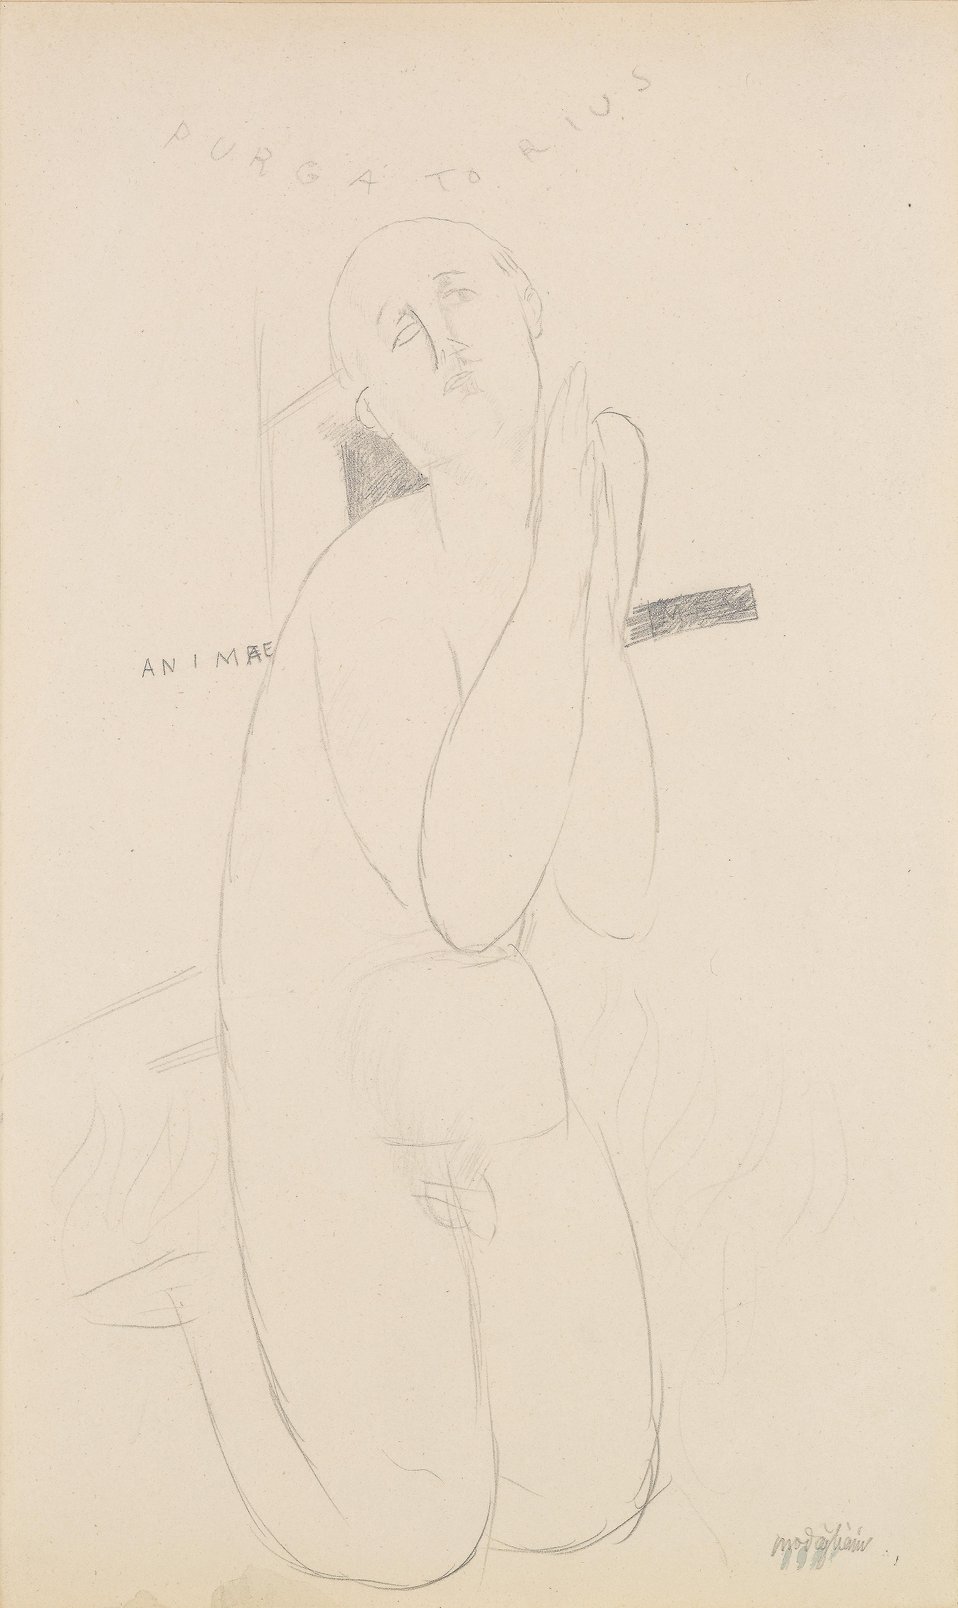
Purgatorius animae, 1916, signiert Modigliani, Bleistift auf Papier auf Karton, 43,5 x 27 cm